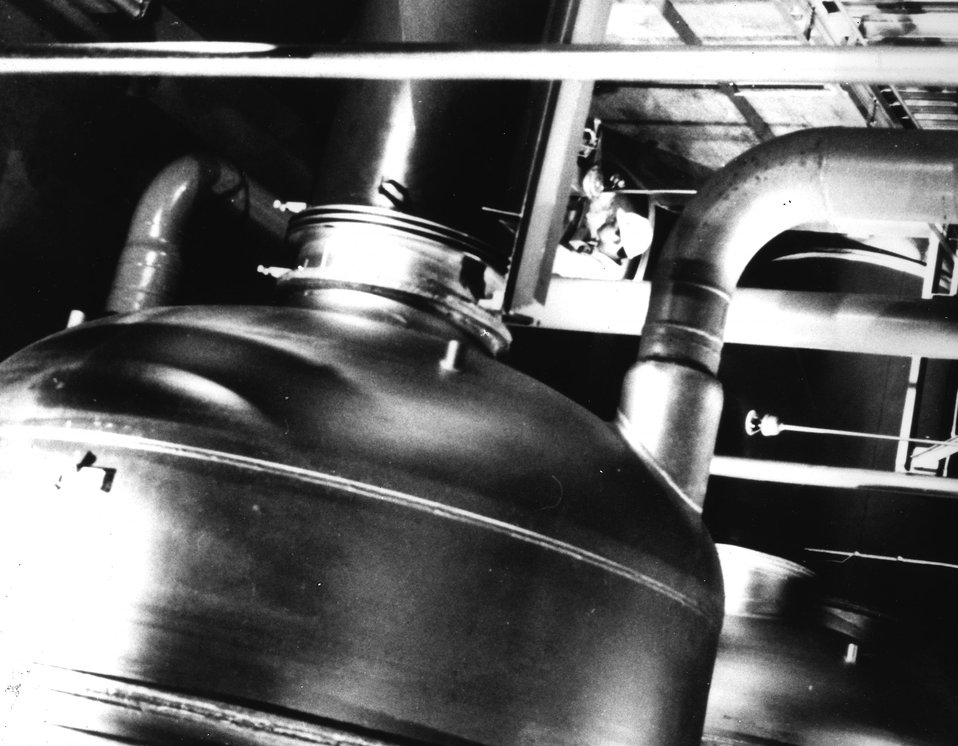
The gaseous diffusion process, which enriches uranium for use in atomic energy activities, is done at Energy Research and Development Administration-owned, contractor-operated plants in Kentucky, Ohio, and Tennessee. c. 1971